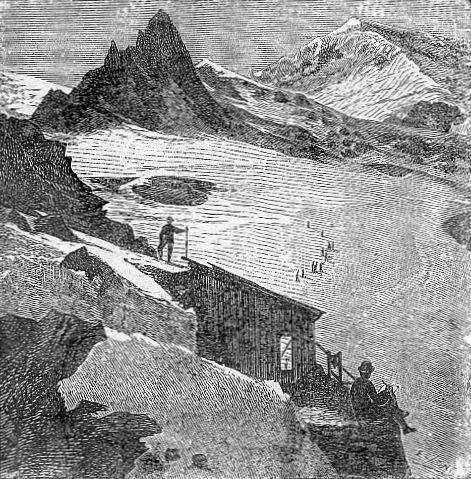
An illustration from Jules Verne's short story 'Quarantième ascension française au mont Blanc' (1871) drawn by Edmond Yon. Polski: Ilustracja opowiadania Juliusza Verne'a 'Quarantième ascension française au mont Blanc' (Czterdzieste francuskie wejście na Mont Blank , 1871) autorstwa Edmonda Yona. Français : Jules Verne: 'Quarantième ascension française au mont Blanc' (1871), dessins par Edmond Yon.